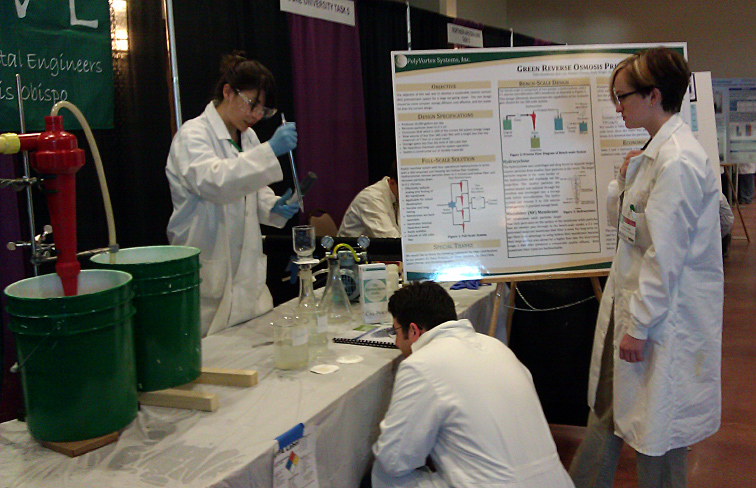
CBFO Members Are DOE Judges at International Environmental Design Contest

California Institute of Technology students test output from cyclone treatment at the 2012 WERC IEDC.
***

Carlsbad Field Office (CBFO) members Dr. Josef Sobieraj of Environmental Safety and Health and Steve Casey of the National TRU Program served as judges for the recent 2012 Waste-management Education and Research Consortium (WERC) International Environmental Design Contest (IEDC).

“This annual event brings together industry, government and academia in search of environmental solutions,” said Casey.